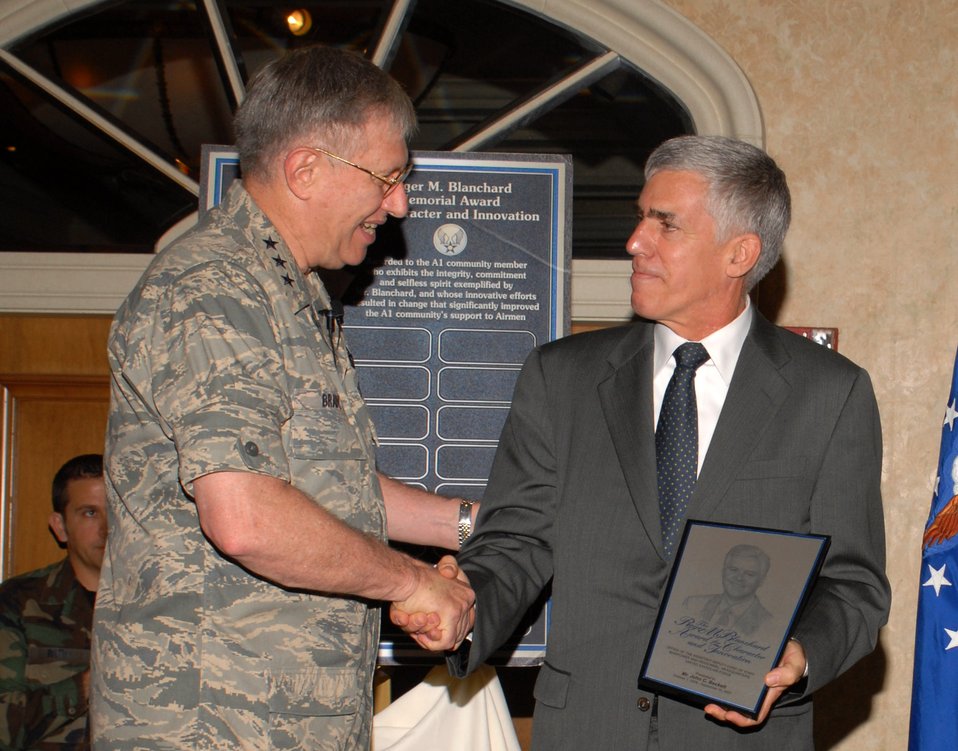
Services program manager receives new A1 award

Lt. Gen. Roger A. Brady presents the first Roger M. Blanchard Memorial Award for Character and Innovation to John Beckett at the 2007 Worldwide Manpower and Personnel Training and Professional Development Conference Nov. 30 in San Antonio. General Brady is the Air Force deputy chief of staff for personnel. Mr. Beckett serves as the Air Force's Survivor Assistance Program manager at the Pentagon. The new award honors the former assistant deputy chief of staff for manpower and personnel, who passed away Sept. 30.